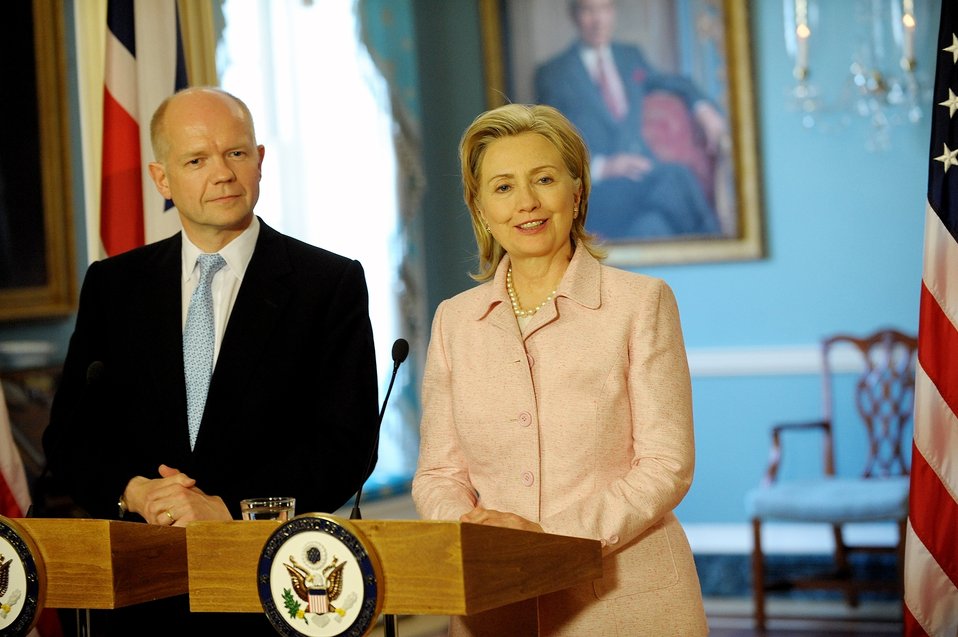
Secretary Clinton Meets With British Foreign Secretary William Hague

U.S. Secretary of State Hillary Rodham Clinton meets with British Foreign Secretary William Hague in the Treaty Room at the U.S. Department of State, Washington, D.C., May 14, 2010.